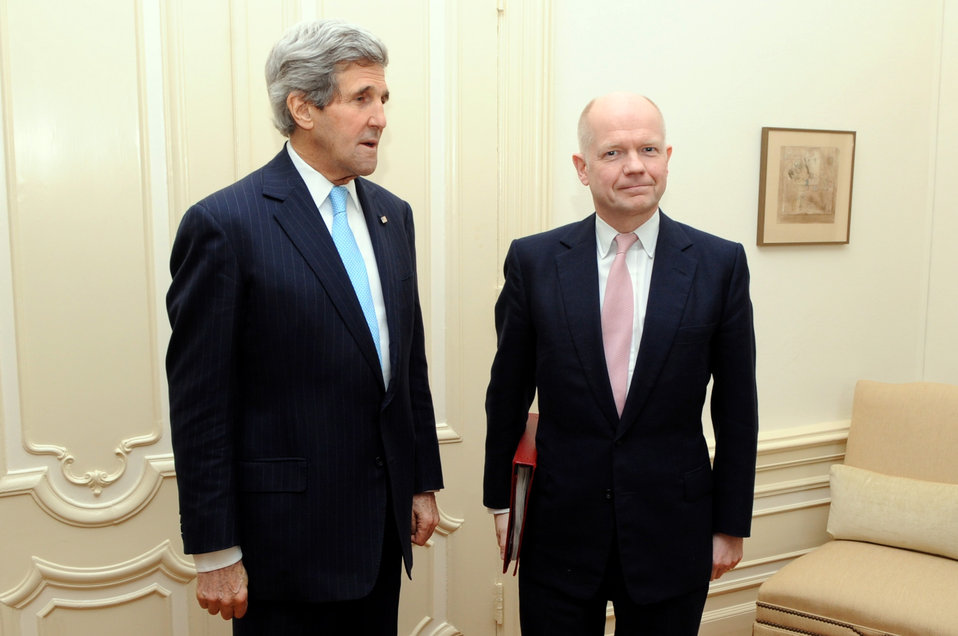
Secretary Kerry, British Foreign Secretary Hague Pose for Photograhers Before Meeting in the Netherlands

U.S. Secretary of State John Kerry and British Foreign Secretary William Hague pose for photographers before a bilateral meeting they held on the margins of the National Security Summit in The Hague, the Netherlands, on March. 24, 2014.